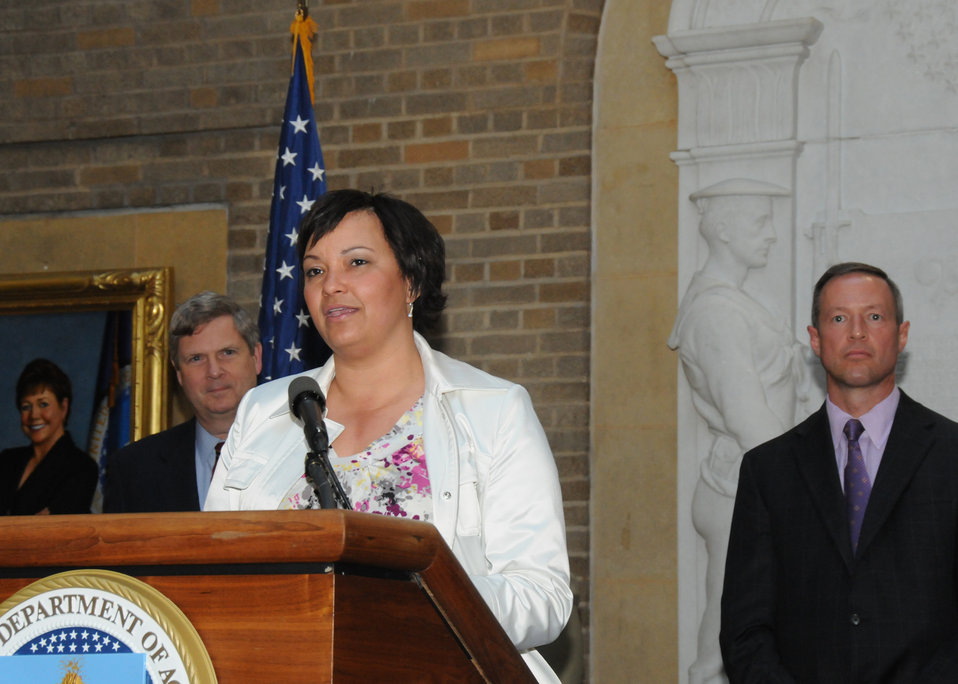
Environmental Protection Agency Administrator Lisa Jackson makes remarks at the White House Conference on America’s Great Outdoors reception held at the Department of Agriculture on Thursday, April 15, 2010. (L to R in backgound Agriculture Secretary Tom Vilsack and Maryland Governor Martin O’Malley) USDA photo 10di1315-71